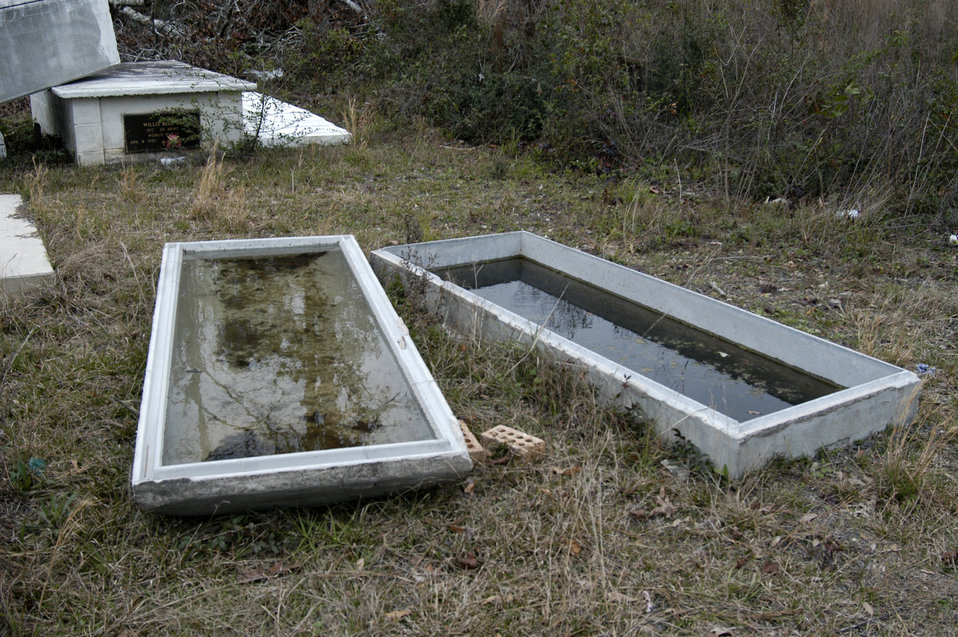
Cemeteries surrounding New Orleans, LA, had crypts ripped from their foundations and the encased remains were swept away by the 20-foot storm surge from hurricane Katrina. Hurricane Katrina was the 6th strongest Hurricane in U.S. history and the 5th deadliest. Katrina made landfall on Monday morning, August 29, 2005 as a Category 3 hurricane with sustained winds of 125 mph with over a 20-foot storm surge. Katrina caused catastrophic damage over 90 thousand square miles across Louisiana with an estimated $75 billion dollars in damage. The total economic impact to the Gulf Coast was estimated at over $150 billion. 80% of New Orleans, LA, was underwater with some areas more than 20 feet deep. Less than a month later southern Louisiana was struck by a second Category 3 hurricane Rita inflicting more damage in the southwestern areas of Louisiana adding an addition $12 billion worth of damage to the already beleaguered state. The U.S. Army Corps of Engineers (USACE) under the auspices of FEMA was the lead service in providing assistance to the citizens of Louisiana. The U.S. Department of Agriculture (USDA) supplied emergency food aid, emergency loan assistance to farmers and home owners, and USDA personnel from around the nation volunteered their time and muscle to aid in the recovery operations.